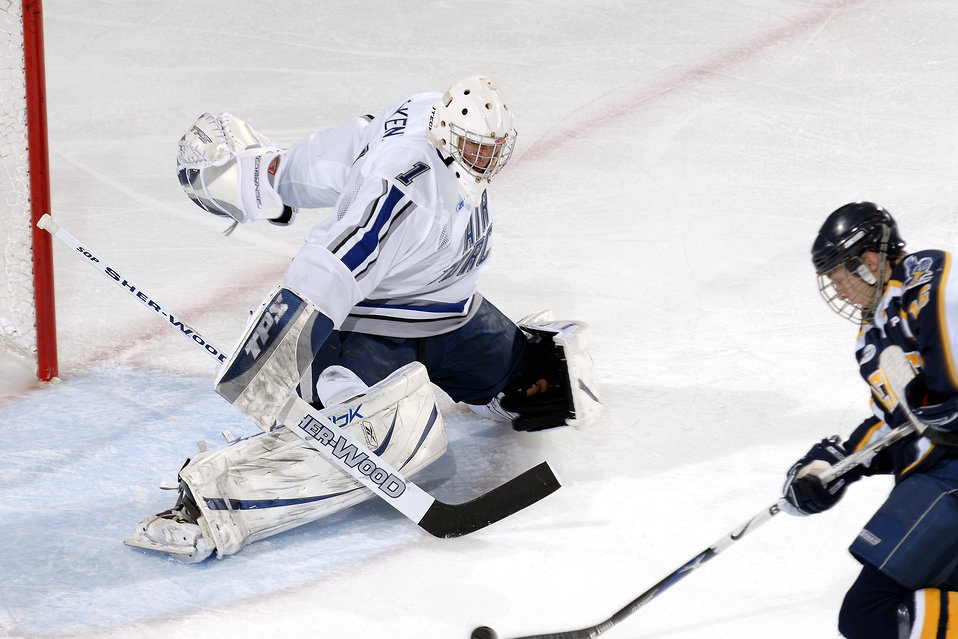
Air Force remains perfect at 8-0

Air Force Academy goalie Andrew Volkening looks to make one of his 52 saves in the series as Air Force defeated Bentley College 5-1 in an Atlantic Hockey Association game Oct. 31 at the Academy's Cadet Ice Arena in Colorado Springs, Colo. The next evening, the Academy skaters defeated Bentley 8-2, giving them a perfect 8-0 start, which ties a school record set in 1971-72. Air Force currently is ranked 14th in the nation.